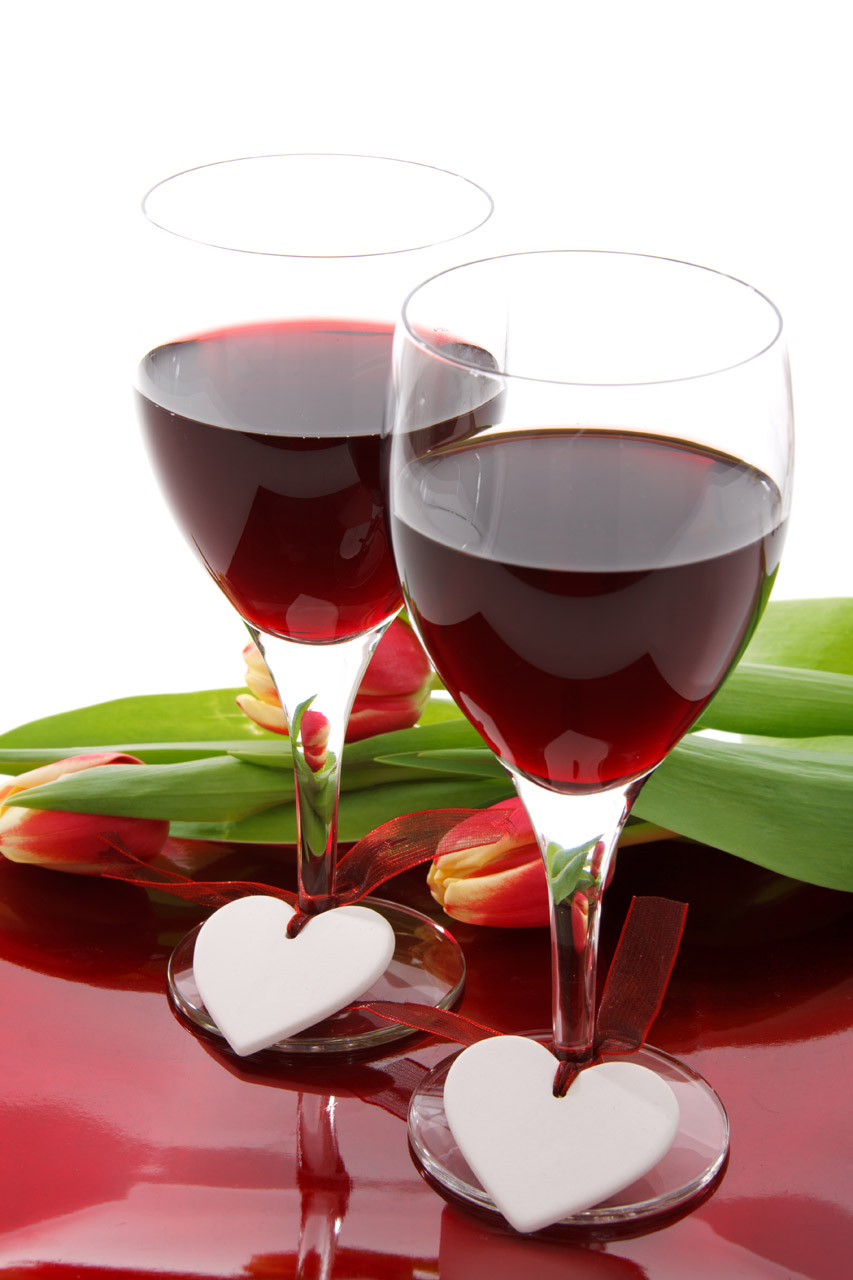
Valentine drink

Two glasses of red wine decorated with ceramic hearts and colorful tulips on a red plate isolated on white background.